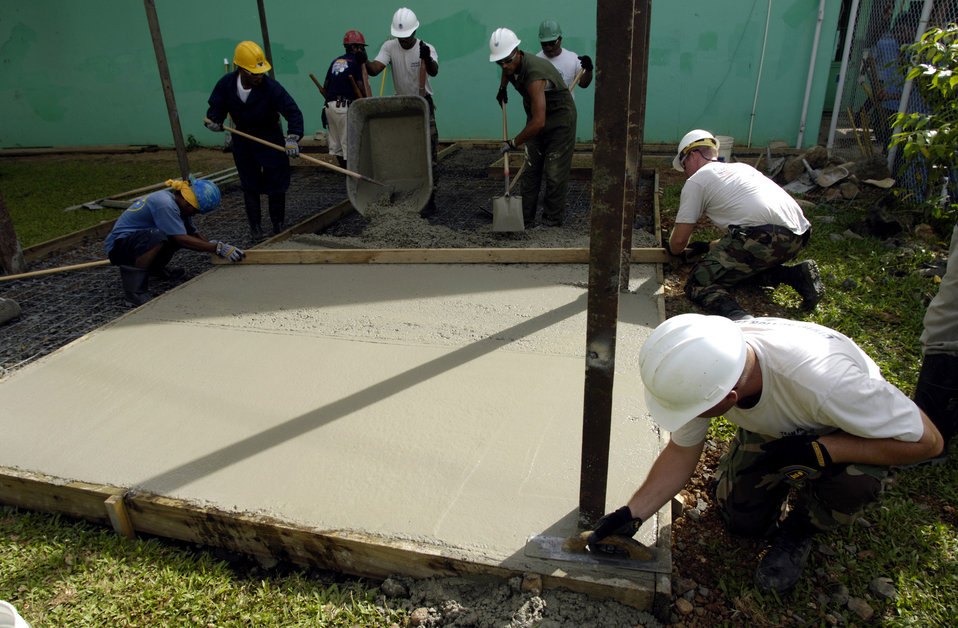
CAT apprentice program

BABLEDAOB, Palau (AFPN) -- Air Force civic action team members and their Palauan apprentices pour cement for a pavilion on the Palau Community College campus. The team's mission is twofold: help develop Palau's basic infrastructure development and provide a favorable U.S. military presence. The team does this through community construction, apprentice training, medical civic action program and community relations.